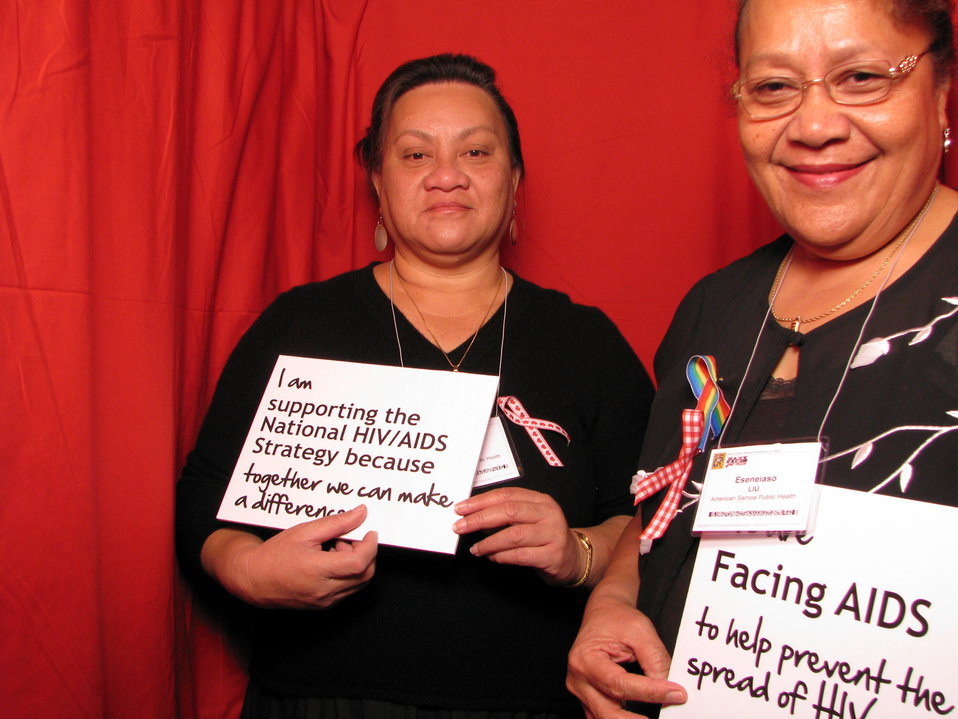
From the AIDS.gov photo booth at the U.S. Conference on AIDS, September 2010 (Orlando, FL).